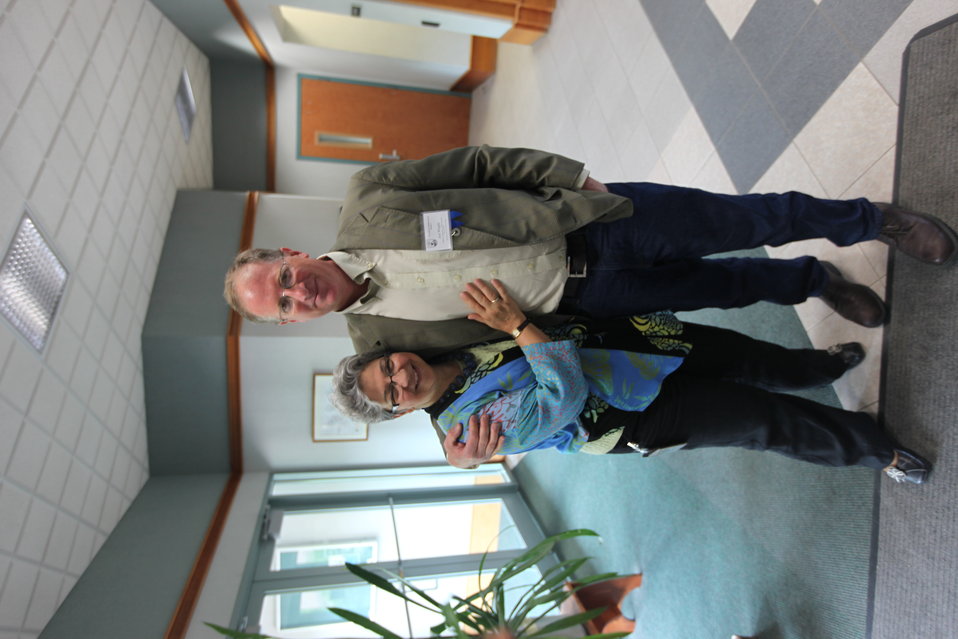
Northeast Region Employee Appreciation Awards

Marci Caplis and Jed Wright.